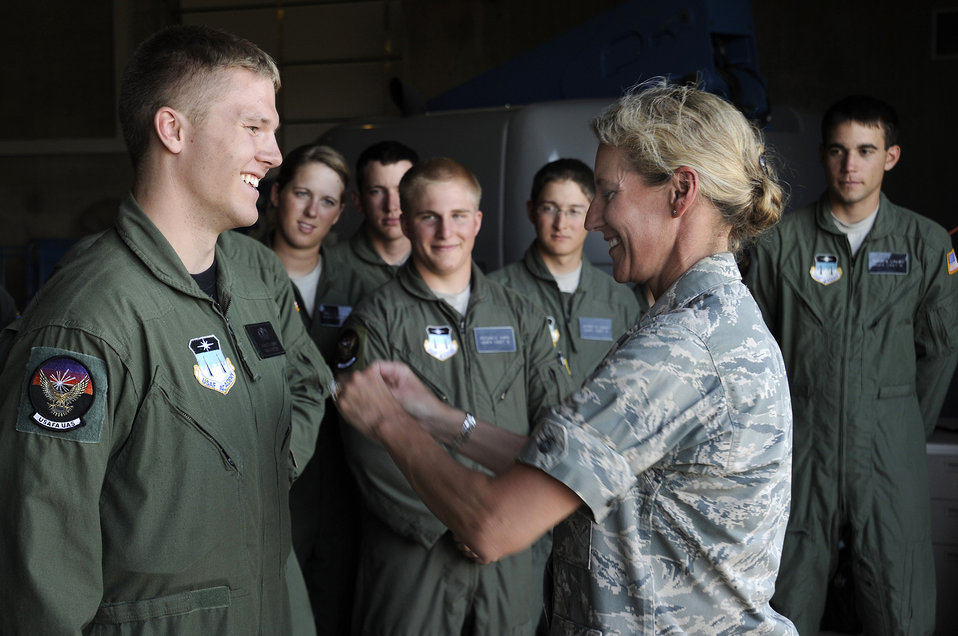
Academy officials add unmanned aircraft system into curriculum

Brig. Gen. Dana H. Born awards Basic Airmanship Wings to Cadet 2nd Class Bradley Sapper July 23 at the U.S. Air Force Academy, Colo. General Born is the Academy dean of faculty.